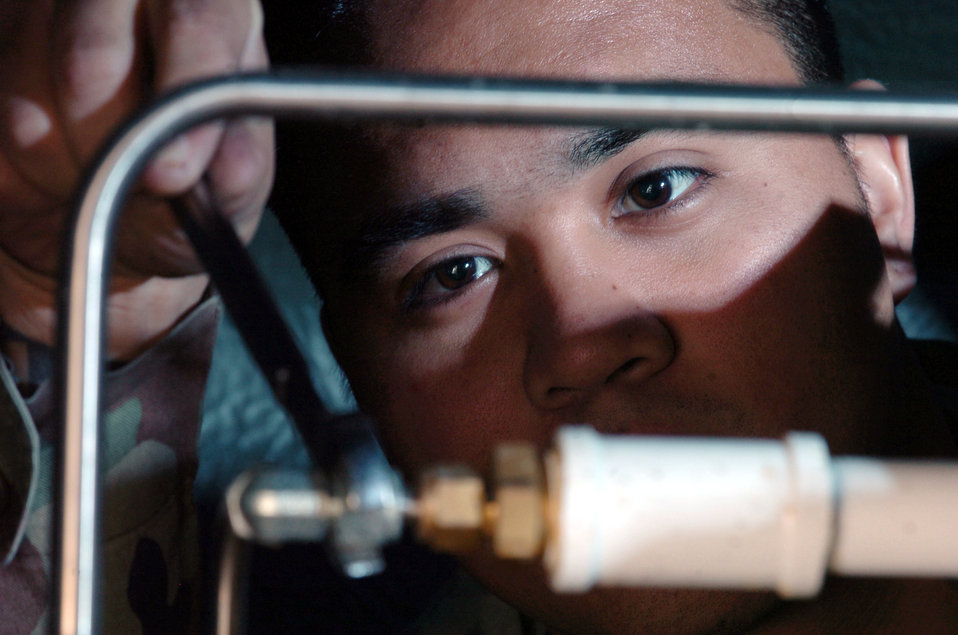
Looking for trouble

YOKOTA AIR BASE, Japan -- Staff Sgt. Gabriel Hayashi secures a fitting on the heat exchanger of a self-generating nitrogen servicing cart. The mission of the 374th Maintenance Squadron Airmen is to inspect, service and repair assigned and in-transit C-130 Hercules aircraft here. They also maintain mission-ready aircraft to sustain contingency and peacetime missions throughout the Pacific theater. Sergeant Hayashi is an aerospace generation equipment mechanic with the squadron.